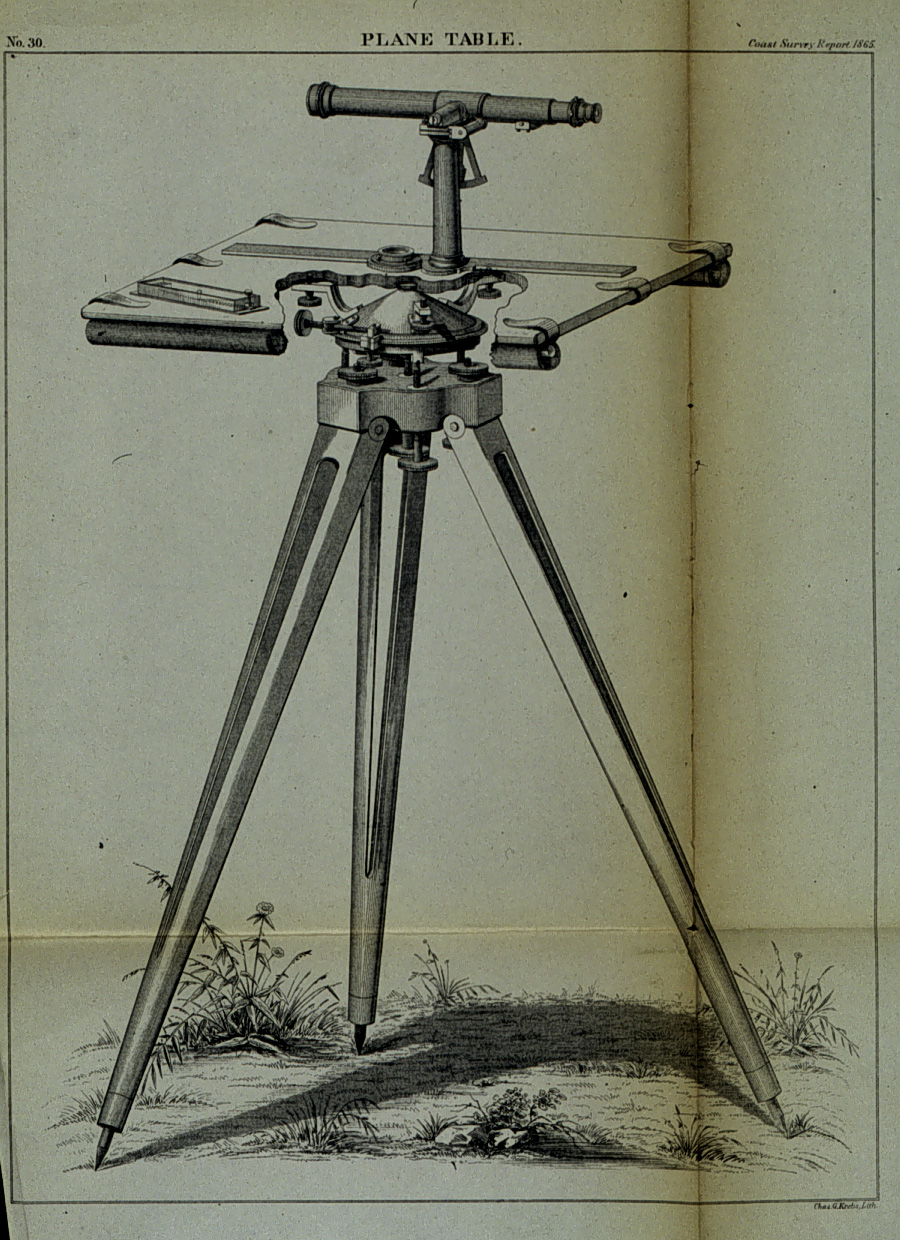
Diagram of plane table with cutaway showing tripod head. C&GS Superintendent's Report for 1865